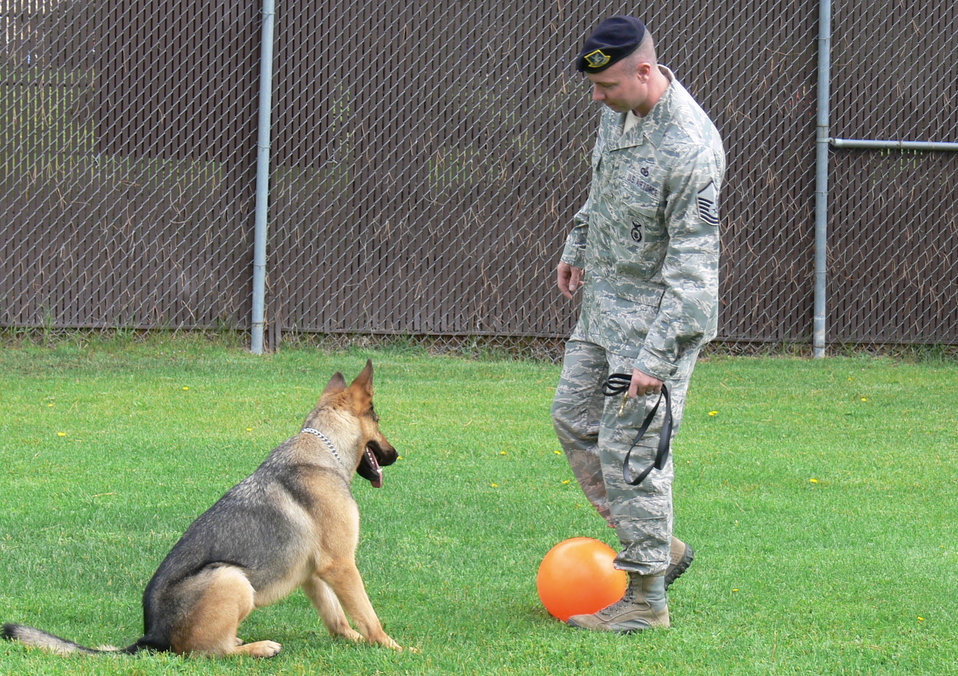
MWD recovers from PTSD

Master Sgt. Eric Haynes plays ball with Gina, a four-year-old German shepherd, during her off-duty time at the dog kennel July 21, 2010, at Peterson Air Force Base, Colo. Sergeant Haynes spent the past six months working daily with Gina, who suffered from post traumatic stress disorder after her tour in Southwest Asia. Sergeant Haynes is the 21st Security Forces Squadron NCO in charge of the military working dog section.